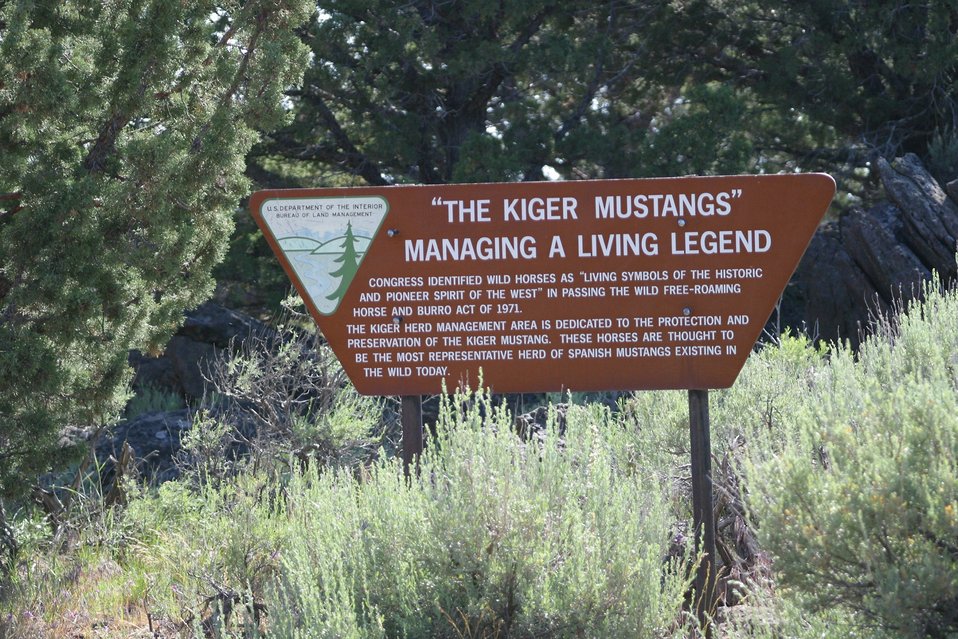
Signage at the Kiger Wild Horse Viewing Area.